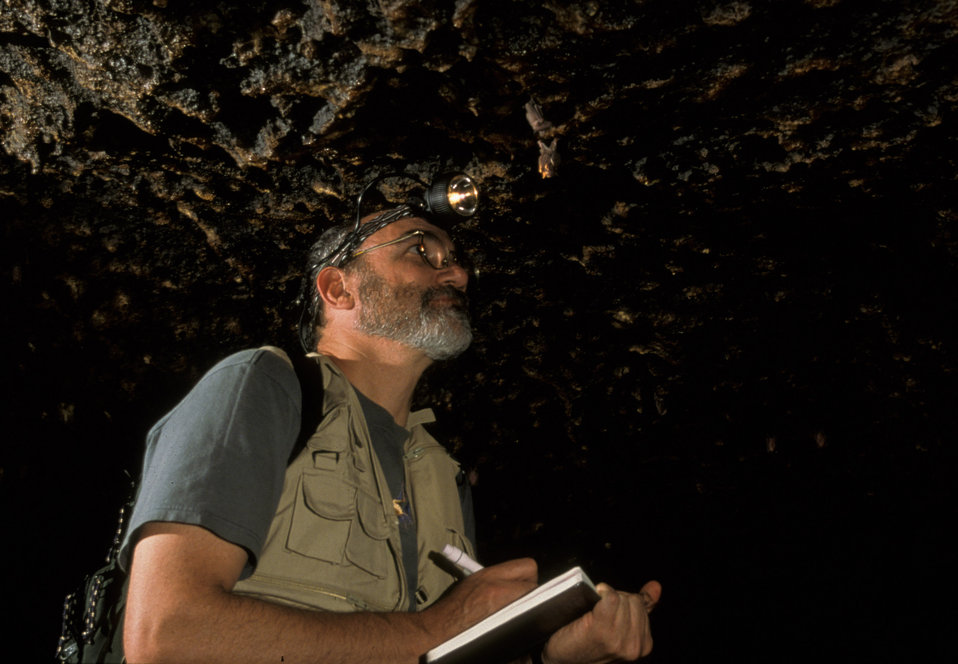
Medellin at Pinacate

Rodrigo Medellin, Wildlife Without Borders grantee, studies bats at Pinacate.